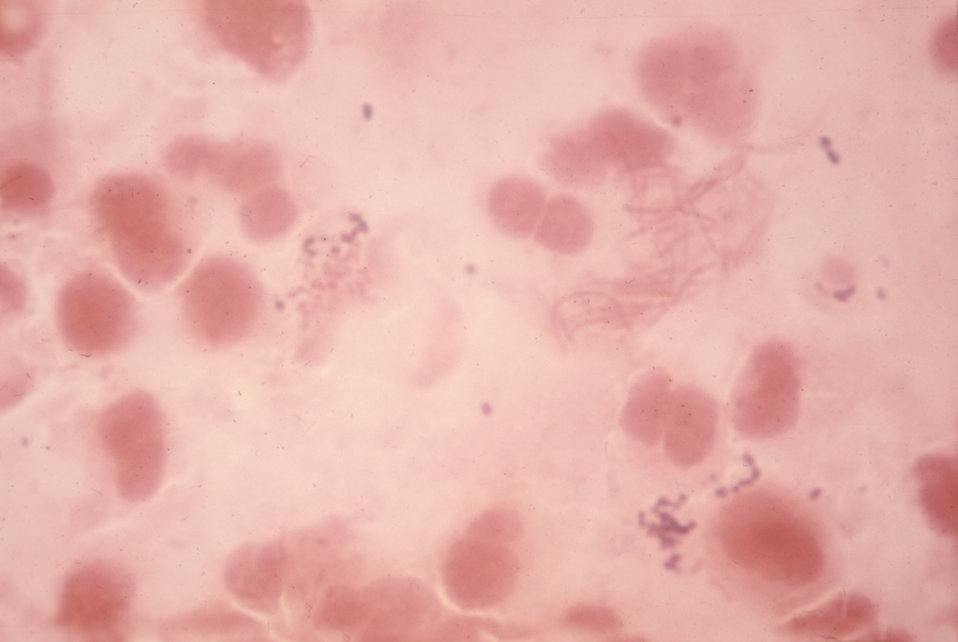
This is a micrograph of an exudate taken from a subdural empyema due to an infection caused by multiple genera of bacteria.